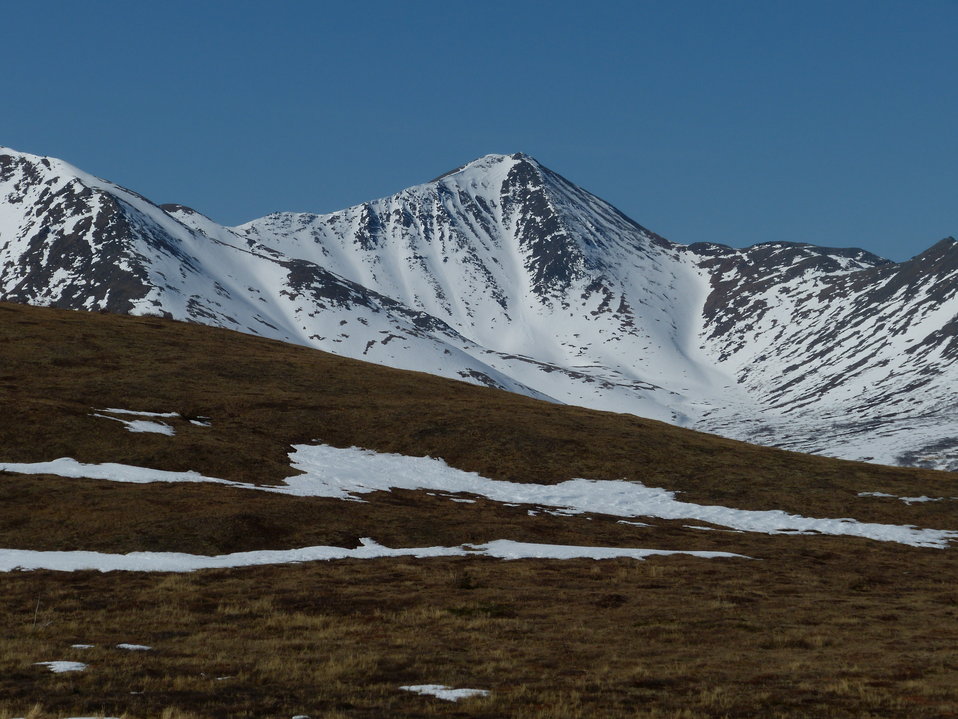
Kilbuck Mountains May2013 KSowl

Cliff-nesting raptor survey, Kilbuck Mountains, Yukon Delta National Wildlife Refuge

Photo credit: Kristine Sowl,
USFWS, YDNWR